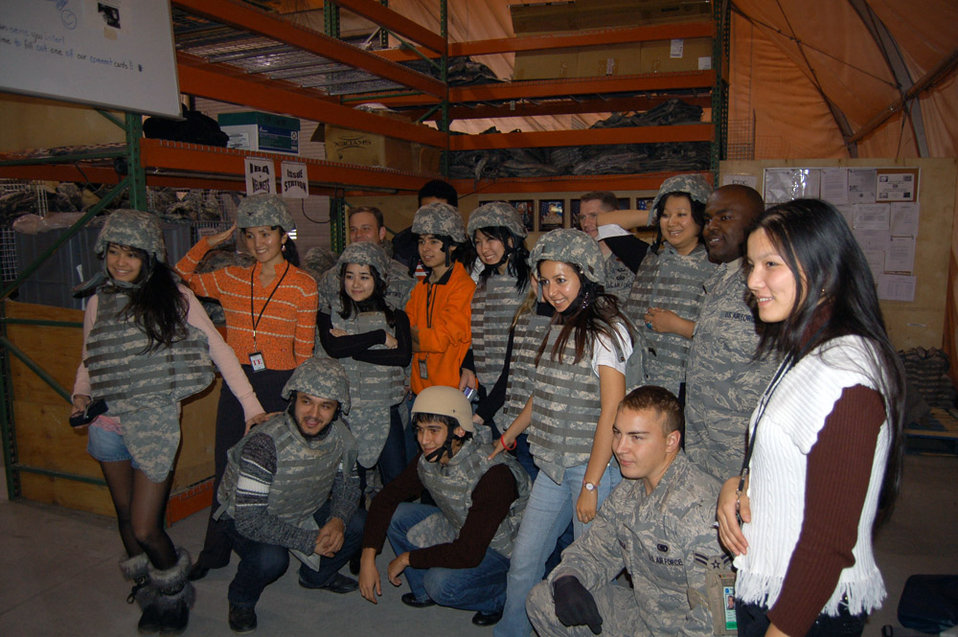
Manas Airmen open base to Kyrgyz college students

Students from the American University of Central Asia try on individual body armor used by forces deploying to Afghanistan during a Nov. 5 visit to Manas Air Base, Kyrgyzstan. Students learned about the mission and the Airmen who serve at the base.